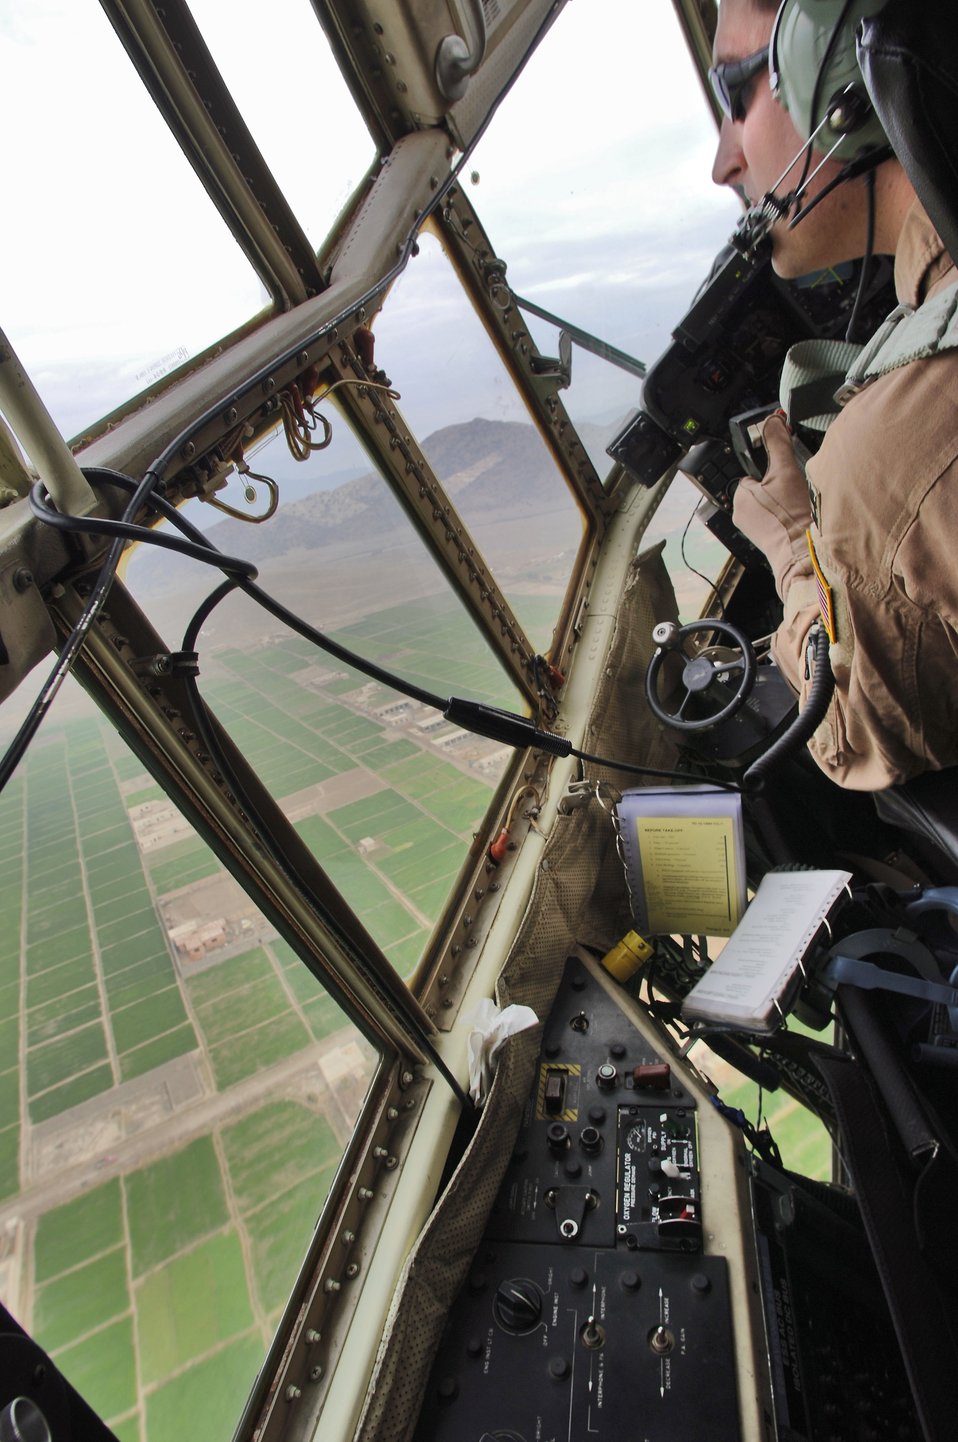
What a view

The crew of a C-130 Hercules aircraft makes tactical turns as they leave Bagram Air Base, Afghanistan, for a flight to Forward Operations Base Salearno, Afghanistan, on Wendesday, March 8, 2006. The aircraft and crew are from the Oklahoma Air National Guard deployed to the 774th Expeditionary Airlift Squadron at Bagram AB.